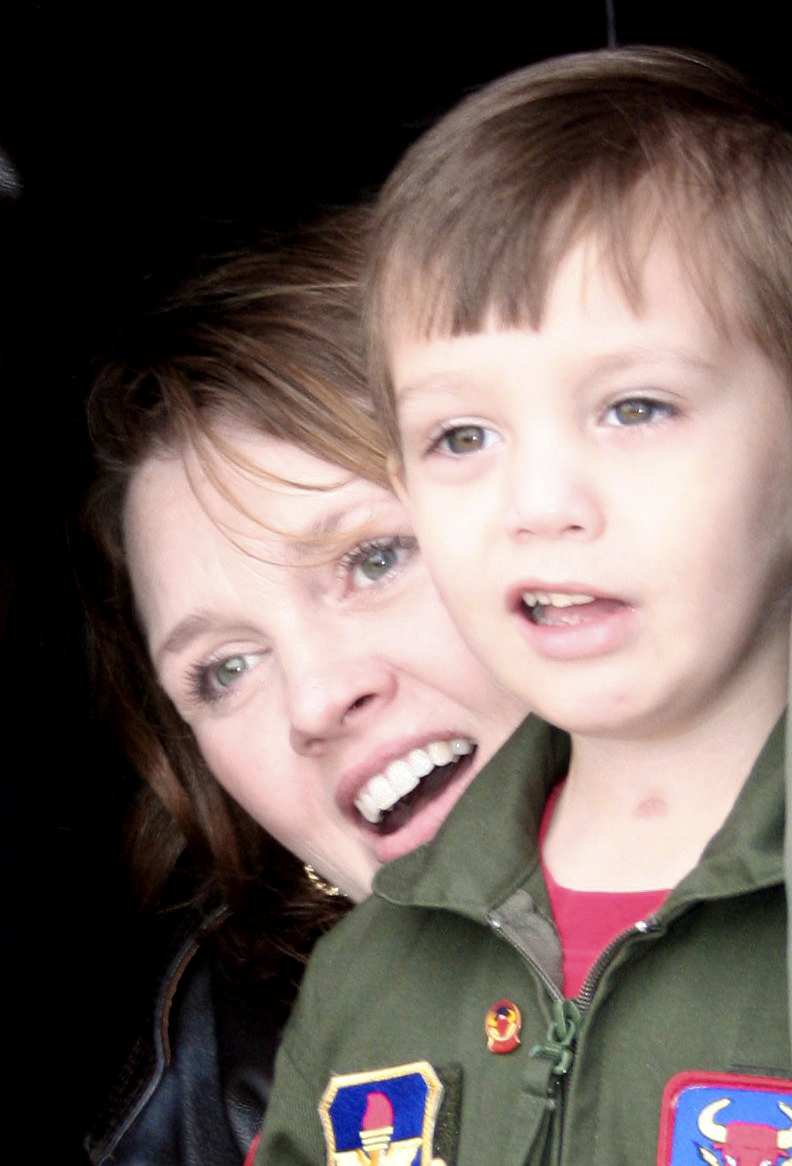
Laughlin Airmen give special opportunity to one of their own

Nicky Pena and his mom, Sabrina look on as 47th Security Forces Squadron Airmen perform a military working dog demonstration during Nicky's Pilot for a Day activities Nov. 20, 2009 at Laughlin Air Force Base, Texas. Nicky participated in numerous activities including tours of the 87th Flying Training Squadron and the Laughlin AFB fire station. Mrs. Pena is a 47th Flying Training Wing sexual assault coordinator.